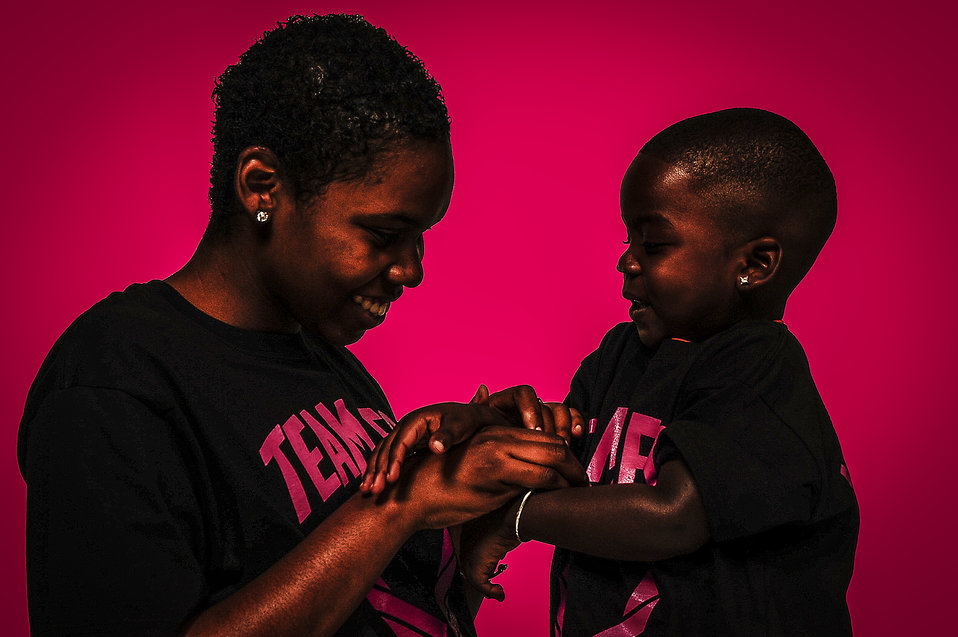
Pink Ribbon Warrior

Senior Airman Latisha Chong, 628th Force Support Squadron, plays with her son Malachi Chong Oct. 16, 2012 at Joint Base Charleston - Air Base, S.C. Chong was diagnosed with Breast Cancer Jan. 19, 2012. Chong went through chemotherapy for five months and was told she was cancer free June June 19, 2012.